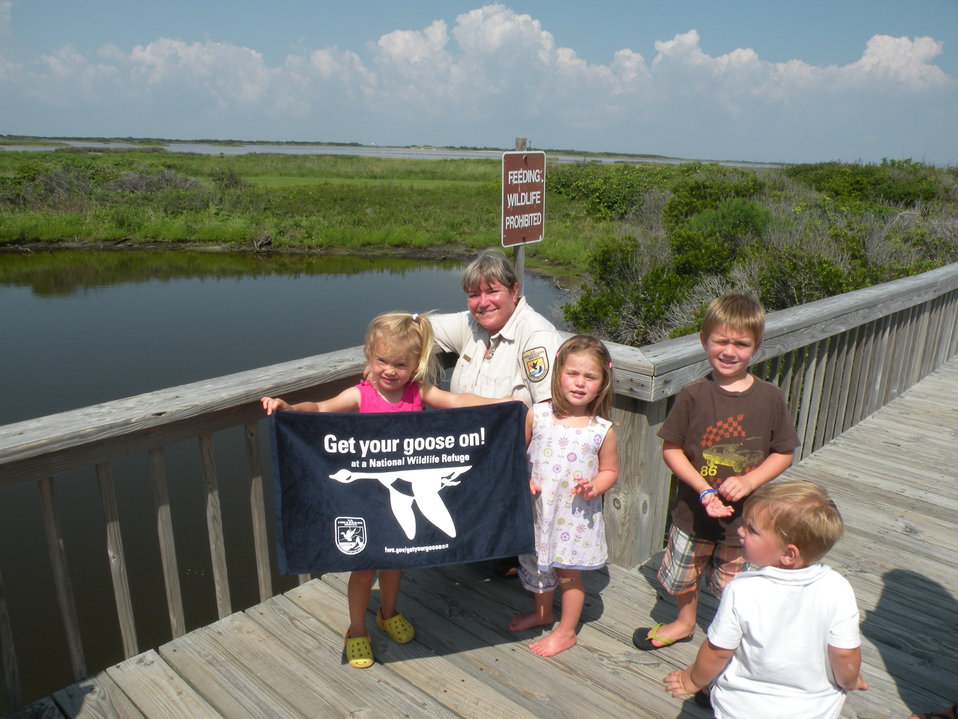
Get Your Goose On!

Visitor Services Specialist Cindy Heffley Gets Her Goose On! with pre-school visitors at PINWR.